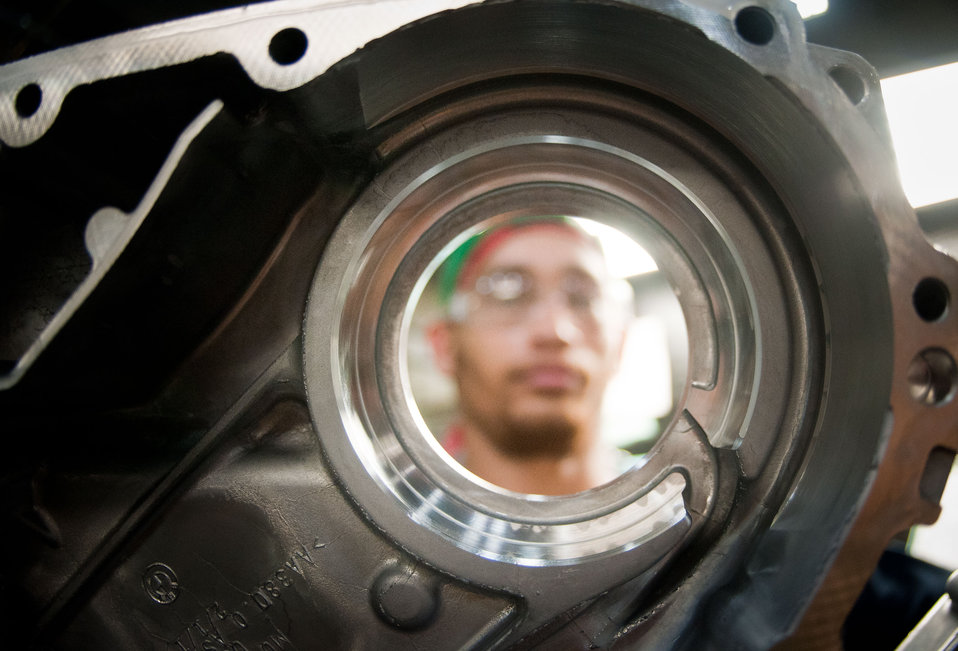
Computer Numerical Control (CNC) machine operator Blake Veeneman makes a inspects a casting at the Port City Group’s Port City Castings Corporation manufactures high-pressure aluminum die-castings, mostly for the automotive industry, in Muskegon, MI, facility on Wednesday July 20, 2011. Port City Group boosted its employment by 12 percent over last year thanks to two Rural Business Guaranteed Loans totaling $9.6 million. In its 80,000 sq. ft. facility, machines that range from 800 – 1,600 tons, and cast A380 aluminum alloy products from melted ingots of aluminum, into automotive components of U.S.A. made vehicles. The process features a variety of robotic presses; computer controlled machining; quality control facility; and complete measurement and testing laboratory. In 2009 banks were backing out of loans for PCG equipment purchase agreements. The U.S. Department of Agriculture (USDA) loan guarantee helped make the loan possible with its guarantee. PCG obtained the needed robotic and other equipment. This resulted in a stable workforce that has since grown. When asked about their USDA experience, Port City Group Sales Manager Laura LaGuire said, “It was great! They were very helpful. Everything that came up was handled smoothly, the money came in place when it was needed, and it was a very smooth transition.”